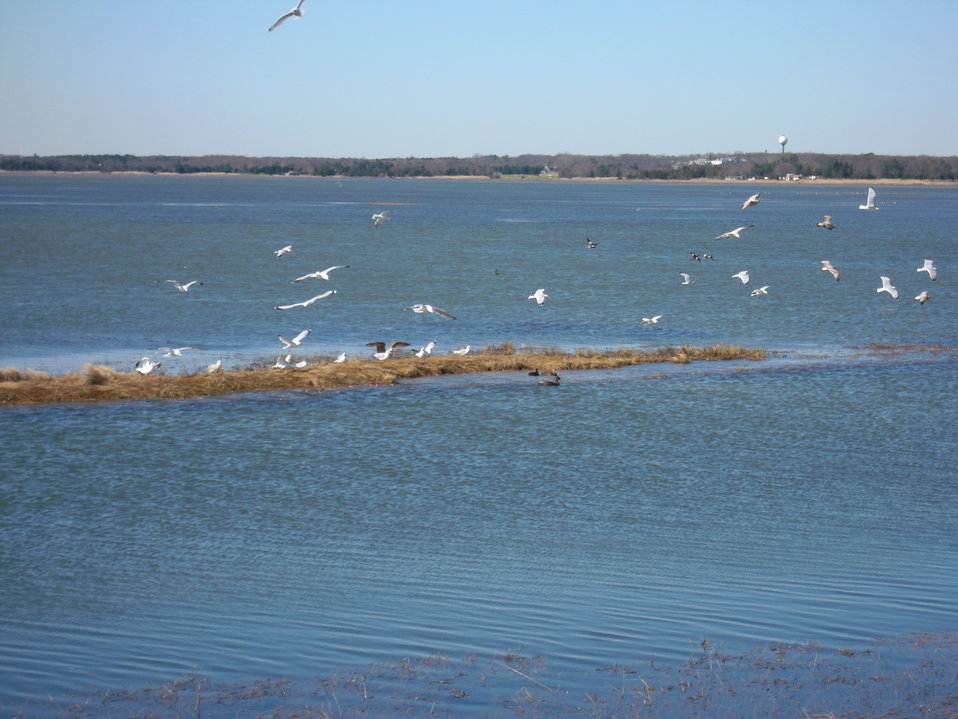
In Flight

Shorebirds take flight at E.B. Forsythe NWR.